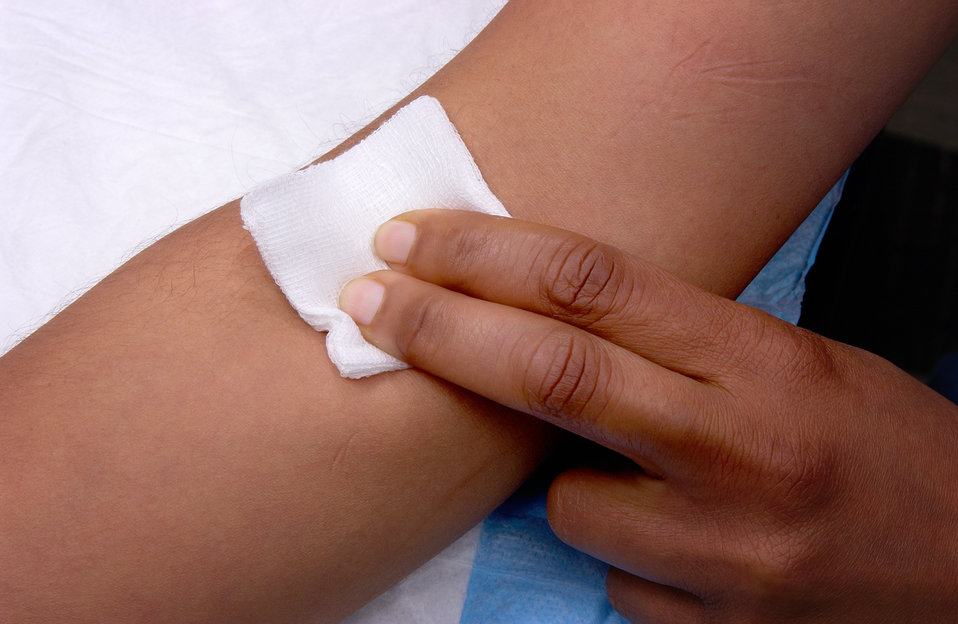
This image depicts a patient who had undergone a percutaneous antecubital venipuncture, which had been performed by a trained phlebotomist, i.e., a technician skilled in the practice of drawing blood from a patient. This image is the sixteenth in a series of 19 images outlining the steps involved in extracting blood during the venipuncture process.